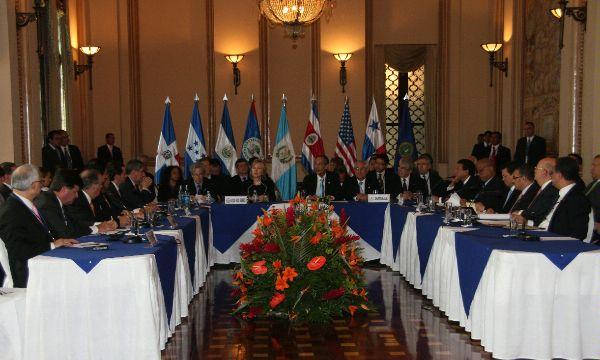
Secretary Clinton Participates in a Multilateral Meeting

U.S. Secretary of State Hillary Rodham Clinton participates in a multilateral meeting with Central American leaders
in Guatemala City, Guatemala, March 5, 2010.